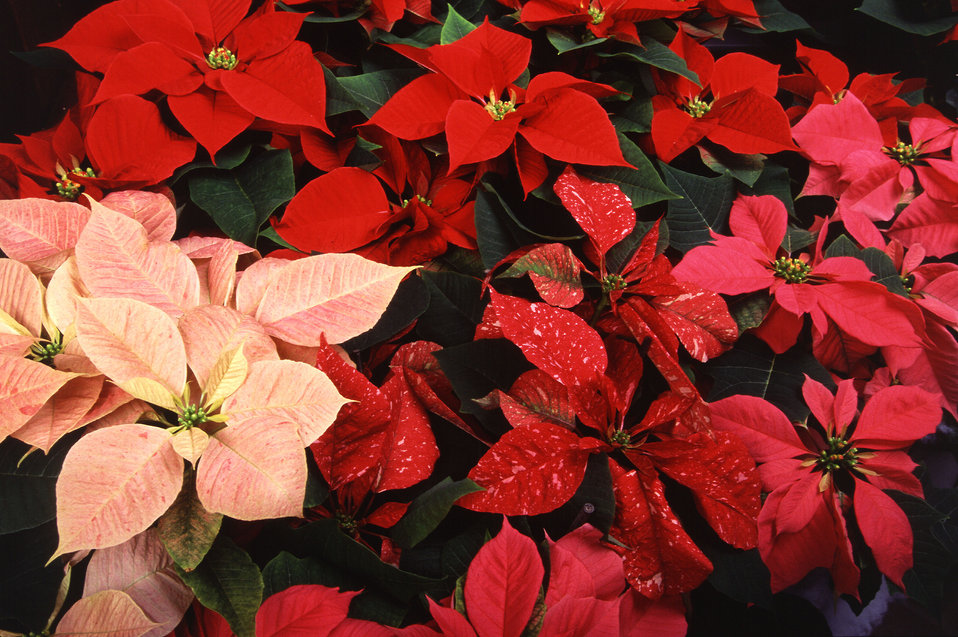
The poinsettia is the most popular Christmas plant and it is the number-one flowering potted plant in the U.S., even though its’ traditional sales period is just 6 weeks. In 1976, the U.S. Department of Agriculture (USDA) Agricultural Research Service (ARS) began research to improve the flower's dependability. USDA ARS discovered the exact conditions of light and temperature the plant requires and devised precision growing methods that enabled massive cultivation. The poinsettia, a contemporary symbol of Christmas, was introduced to the U.S. from Mexico and named after Joel Robert Poinsett in 1825. The Aztec Indians prized poinsettias and considered them a symbol of purity because of their brilliant red color. They made a reddish-purple dye from the colored 'flowers', which are actually modified leaves called bracts. They also made a medicine against fevers from the latex sap of the plant.